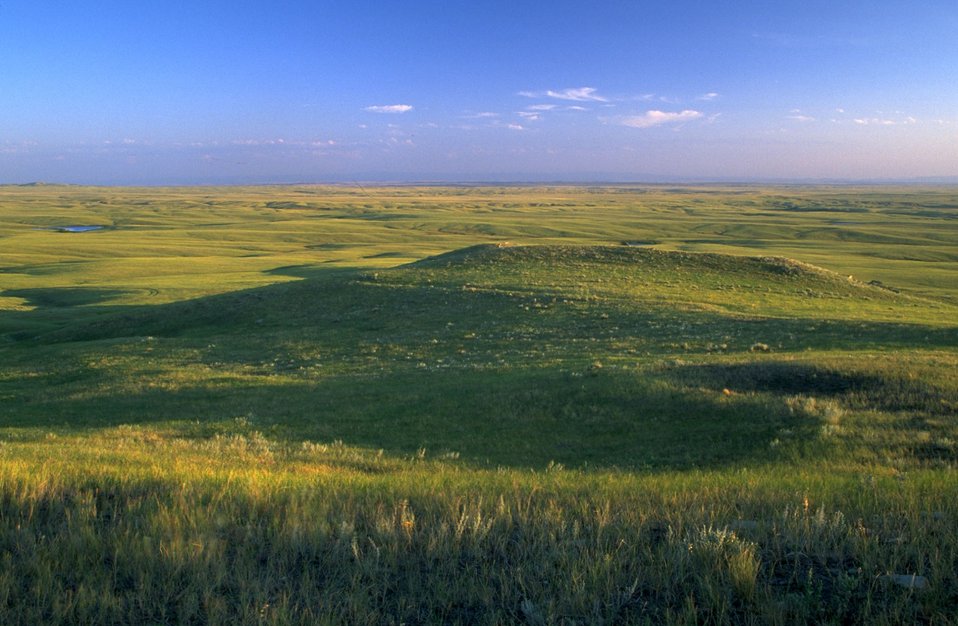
Grassland Vista with Stock Dam in the background